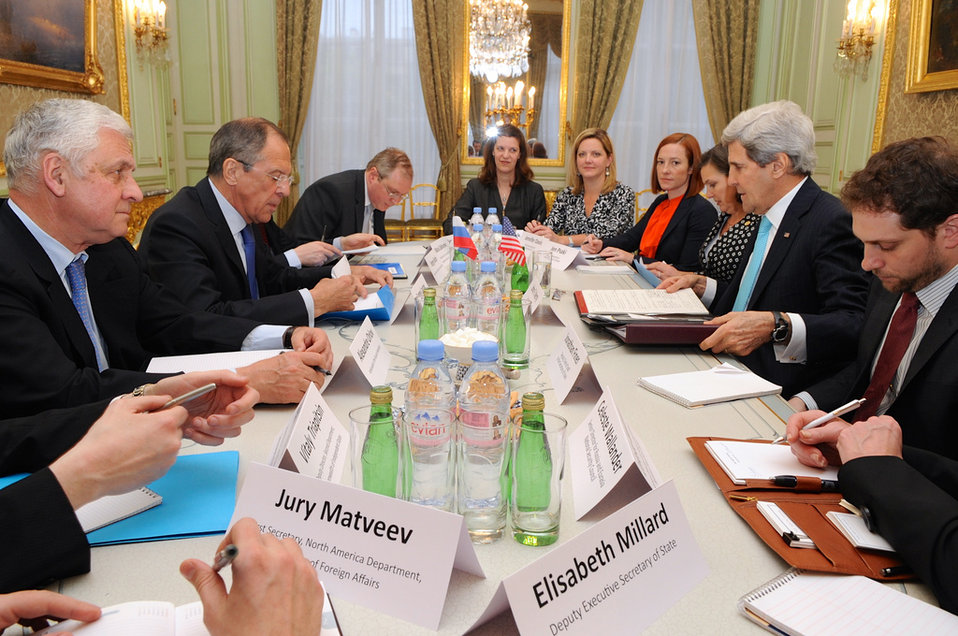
Secretary Kerry, Russian Foreign Minister Lavrov and Teams Hold Ukraine Meeting in Paris

U.S. Secretary of State John Kerry, Russian Foreign Minister Sergey Lavrov and their respective teams sit across from one another in Paris, France, on March 30, 2014, at the outset of a meeting focused on Ukraine.